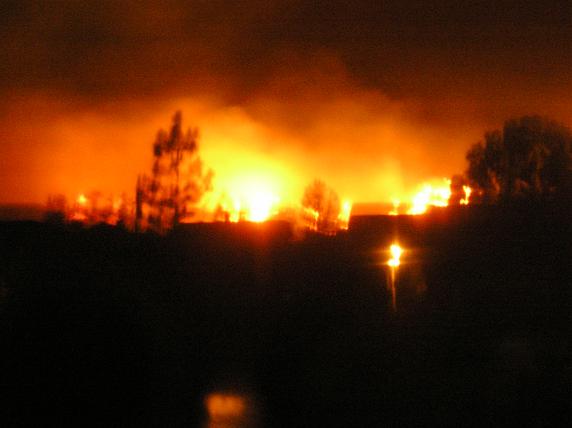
Saugus buckweed fire 5:30 am